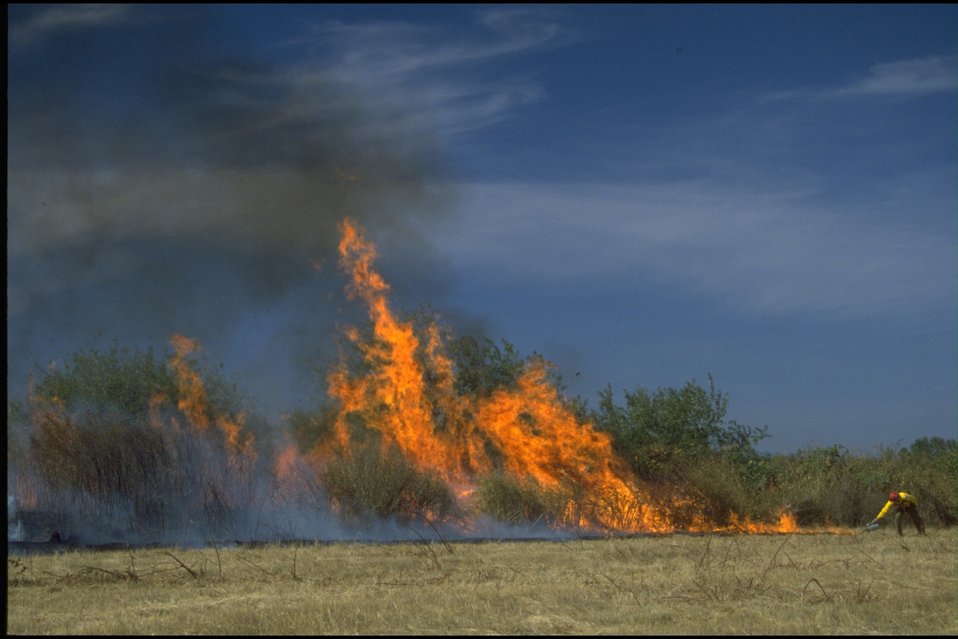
Turtle-Swale Wetland Burn.